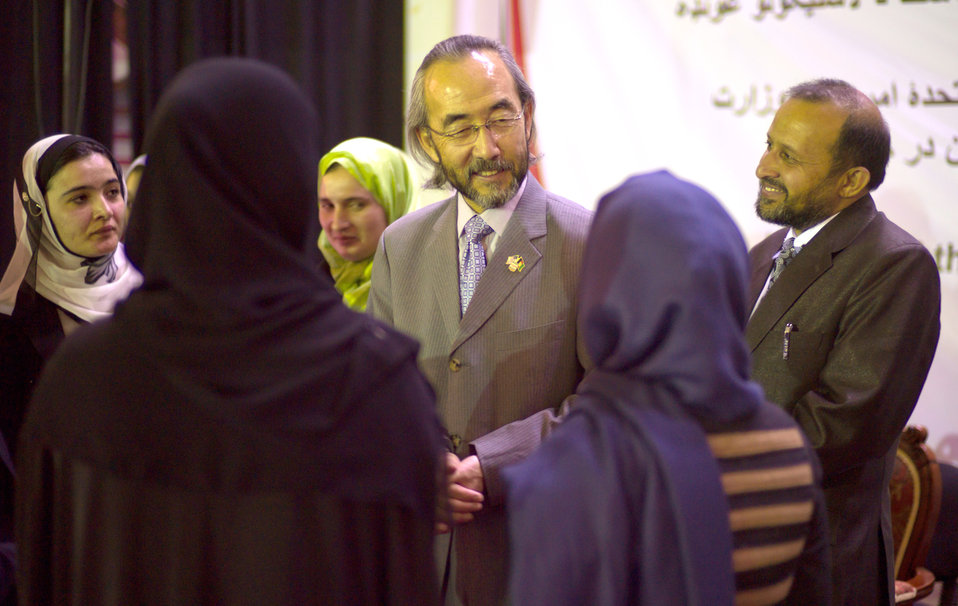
Ken Speaking with interns 1